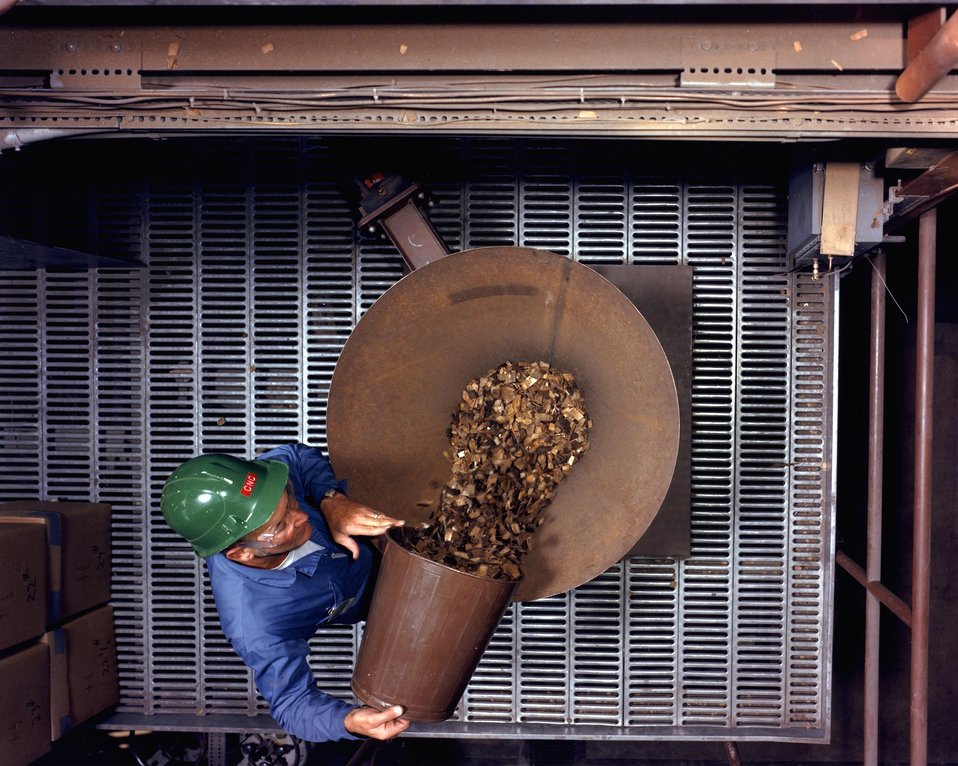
WORKER IS LOADING CHIPS INTO TOP OF THE WOOD FEEDER HOPPER.

THE MULTI-SOLID FLUIDIZED-BED GASIFICATION TECHNOLOGY IS A METHOD OF CONVERTING BIOMASS, E.G., WOOD CHIPS, INTO METHANE-RICH GAS THAT COULD BE USED IN PLACE OF NATURAL GAS.THE METHOD USES A CHEMICAL CATALYST IN A REACTOR SYSTEM TO GASIFY BIOMASS. THIS REACTOR IS LESS COMPLEX IN DESIGN THAN A COAL GASIFICATION PROCESS AND ALLOWS THE USE OF SMALLER UNITS.